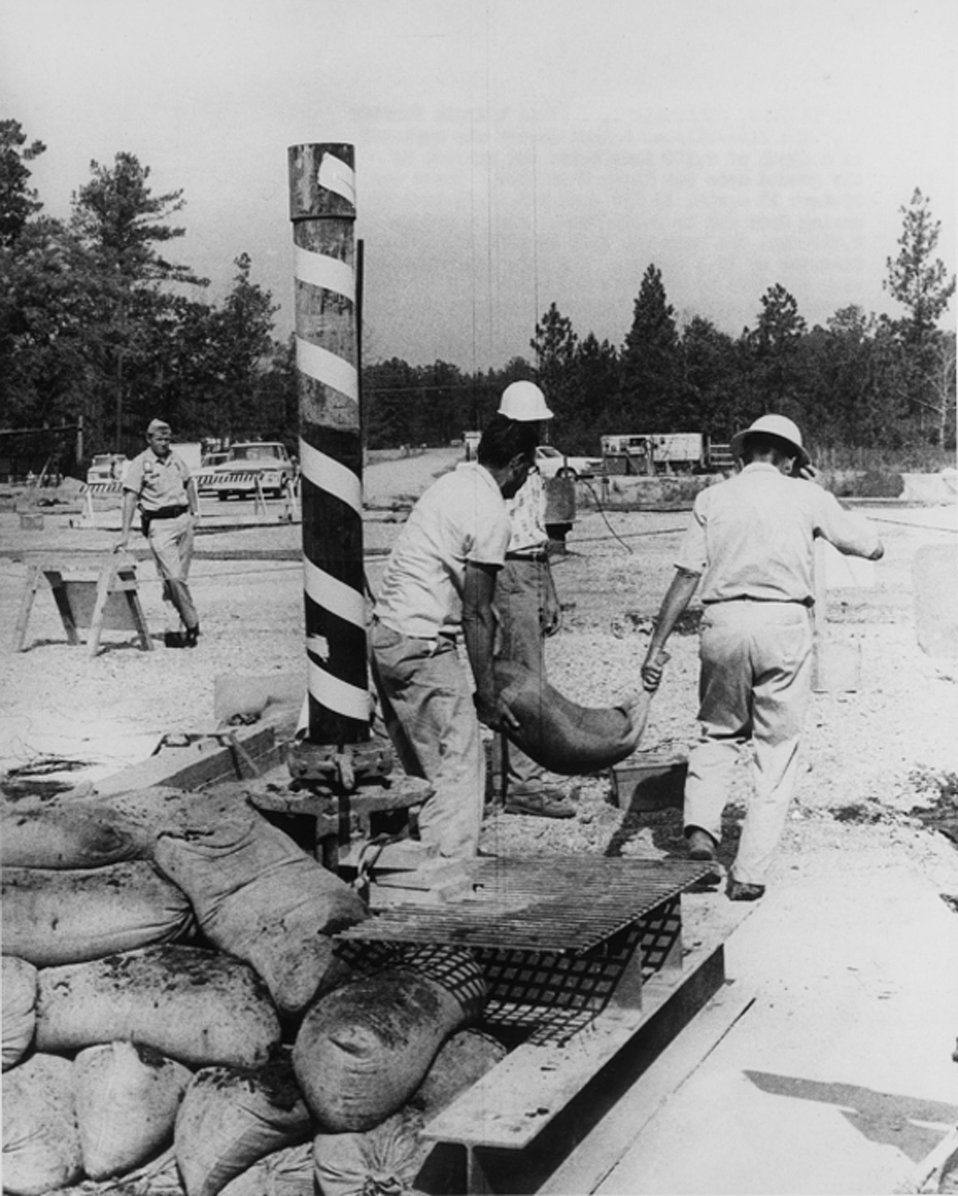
Vela Uniform Program, the five kiloton Salmon device was emplaced at the depth of 2700 feet below the surface of the ground over the Tatum Salt Dome.